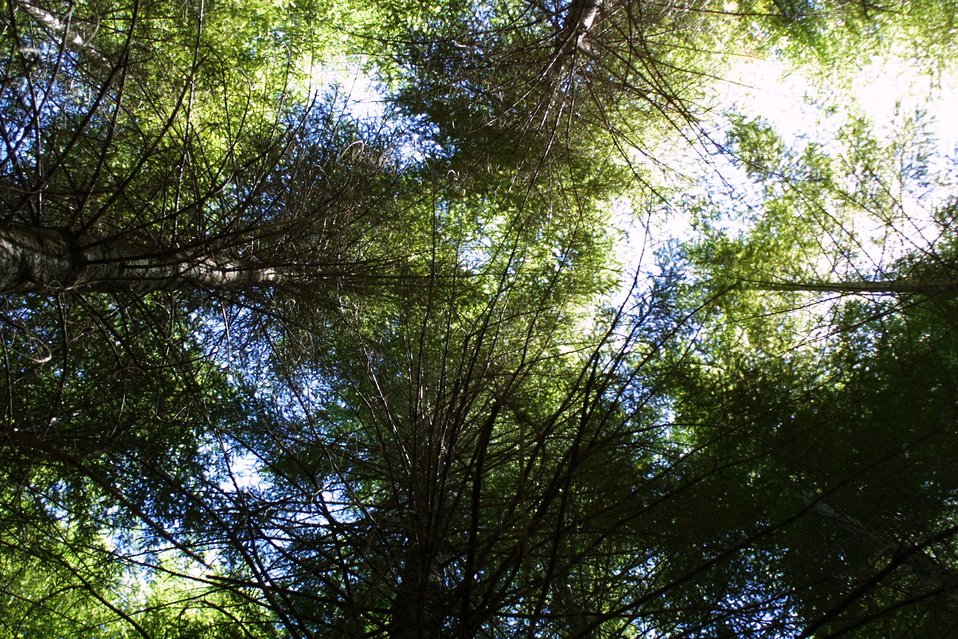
Camas East Timber Sale in Late Successional Reserve.